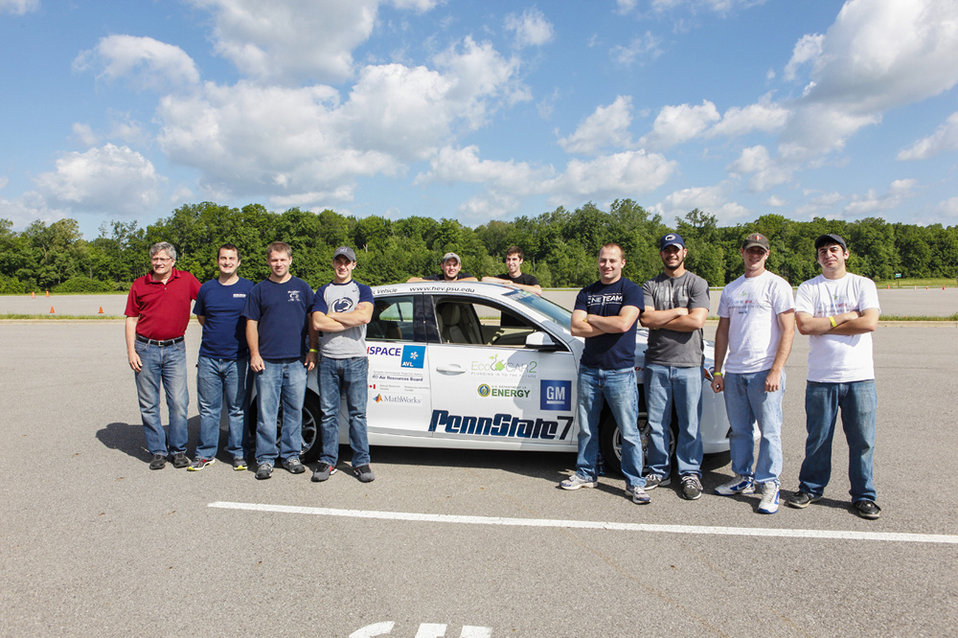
The team from Penn State University placed third with their E85 series plug-in hybrid. Pictured here members of the team poise with their car at GM's Milford Proving Grounds in Michigan. | Photo courtesy of EcoCAR 2.